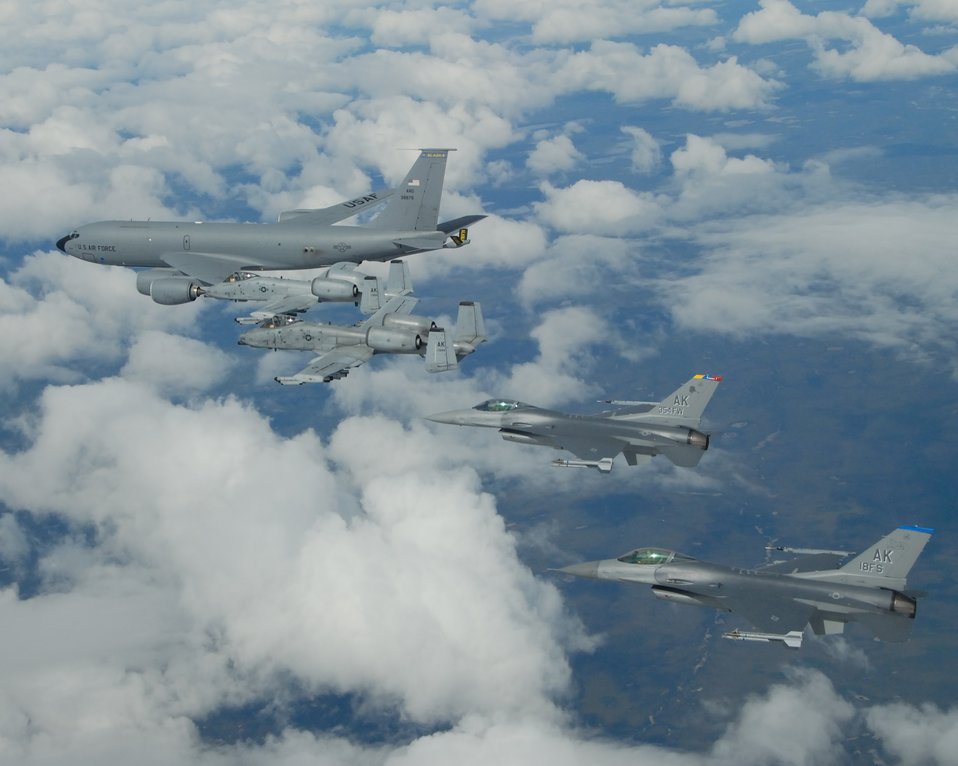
Tanker task force keeps Red Flag flying

A KC-135R Stratotanker flies in formation with two F-16 Fighting Falcons from the 18th Fighter Squadron and two A-10 Warthog IIs from the 355th FS May 29 near Eielson Air Force Base, Alaska. The five aircraft assigned to Eielson AFB flew in formation for the last time due to the deactivation of the 355th FS and 18th FS. The tanker is assigned to the Alaska Air National Guard's 168th Air Refueling Wing. The KC-135R along with tankers from Grand Forks AFB, N.D., and MacDill AFB, Fla., are providing air refueling support to aircraft for the joint exercise Red Flag-Alaska, lasting through June 8.